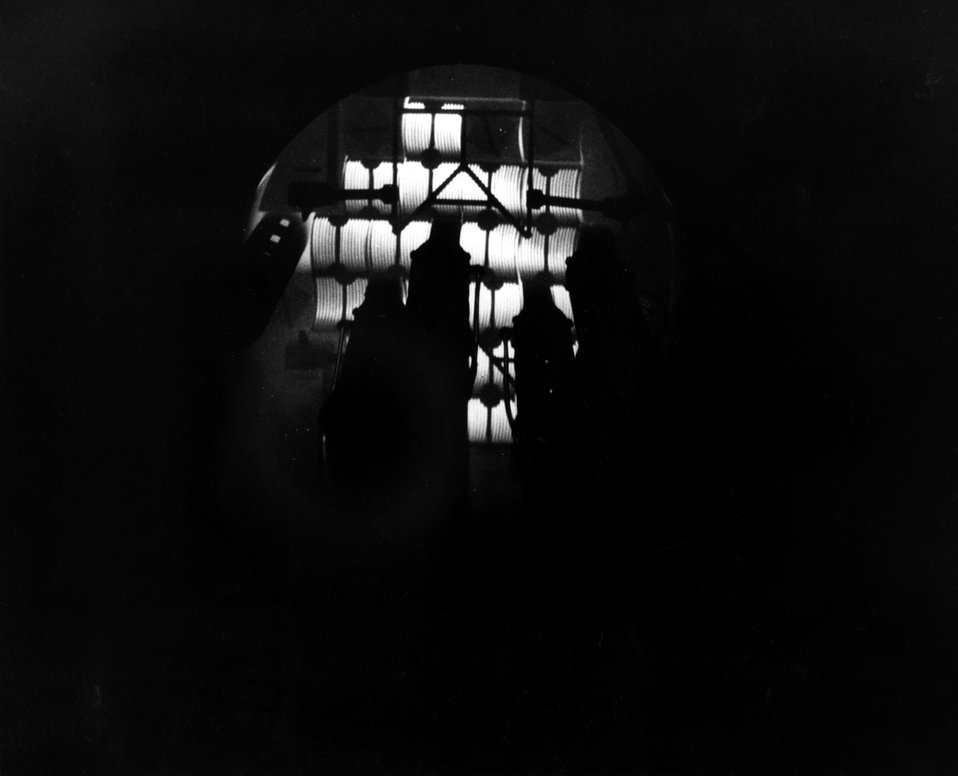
View of the core of the Medical Research Reactor, looking down into the 22-foot high
cylindrical tank containing the enriched uranium fuel elements.